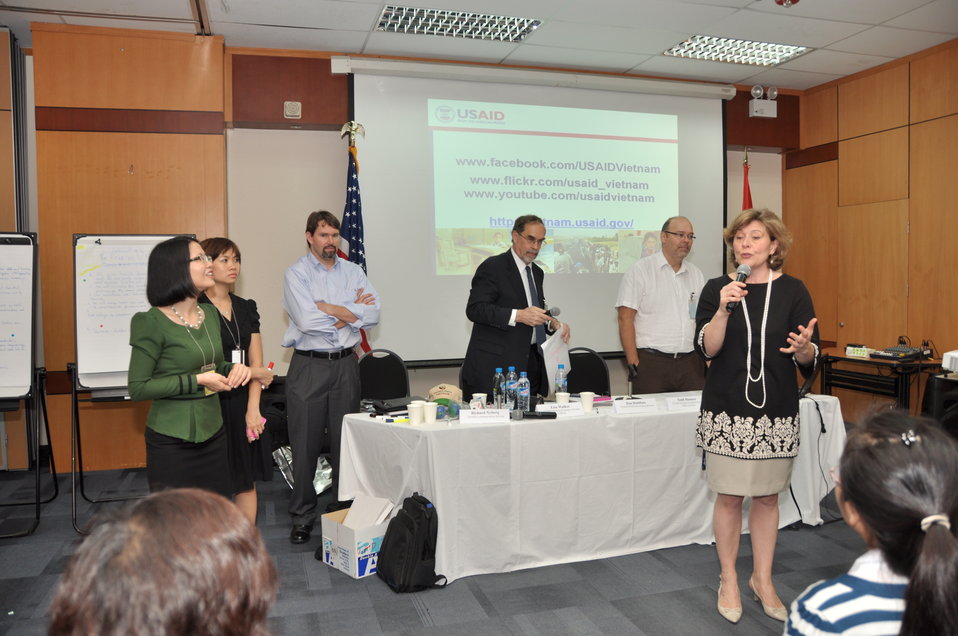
Vietnamese university students join the Business Plan Mashup exercise

Photo: @USAIDVietnam, November 16, 2012